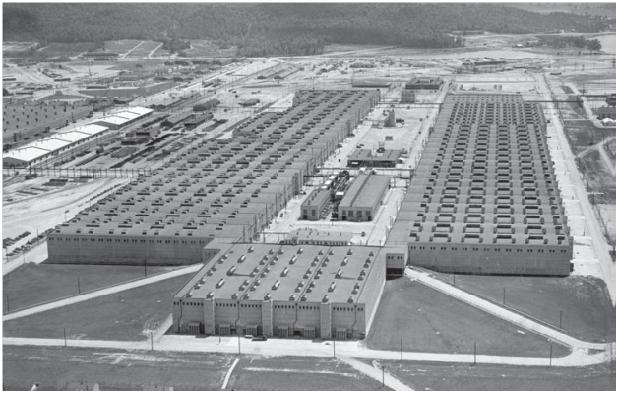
K-25

The U-shaped K-25 Building was built as part of World War II’s Manhattan Project. K-25 housed the world’s first gaseous diffusion plant for enriching uranium and became a key part of the industrial base supporting the nation’s nuclear weapons program. When it was built, K-25 covered 1.64 million square feet and contained more than 3,000 stages of gaseous diffusion equipment and 400 miles of piping.